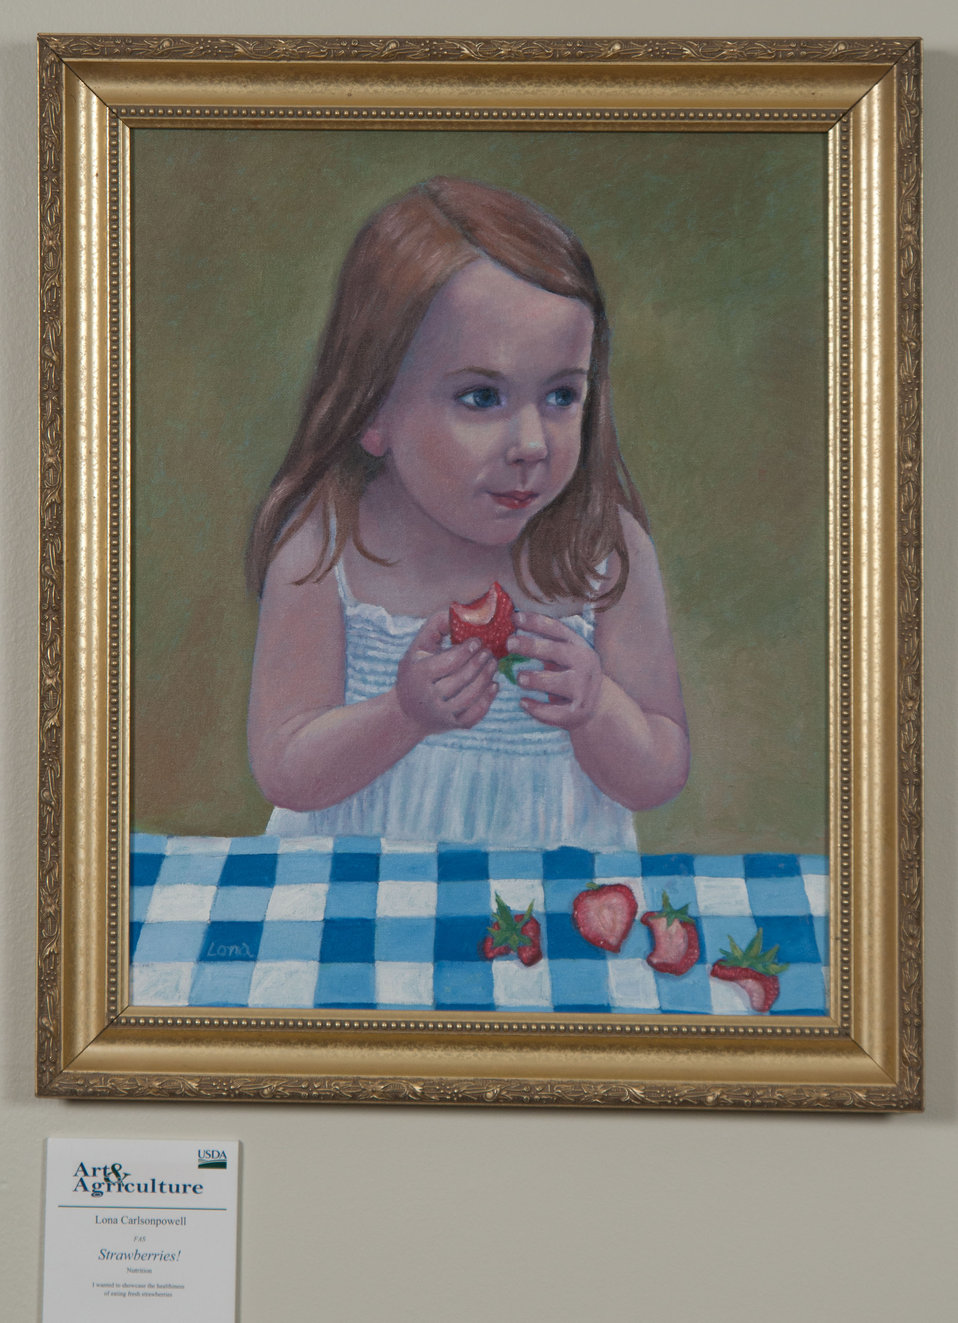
Online Viewer's Choice entries of the 2013 Art & Agriculture, Tuesday, July 9, 2013, in the South Building, Washington, D.C. Themes were expressed by employees from across the department and the contest was open to full-time and part-time USDA employees. Winning artwork will be displayed till the end of the year. U.S. Artistic expression is a creative outlet that is vital for an individual to grow and develop.